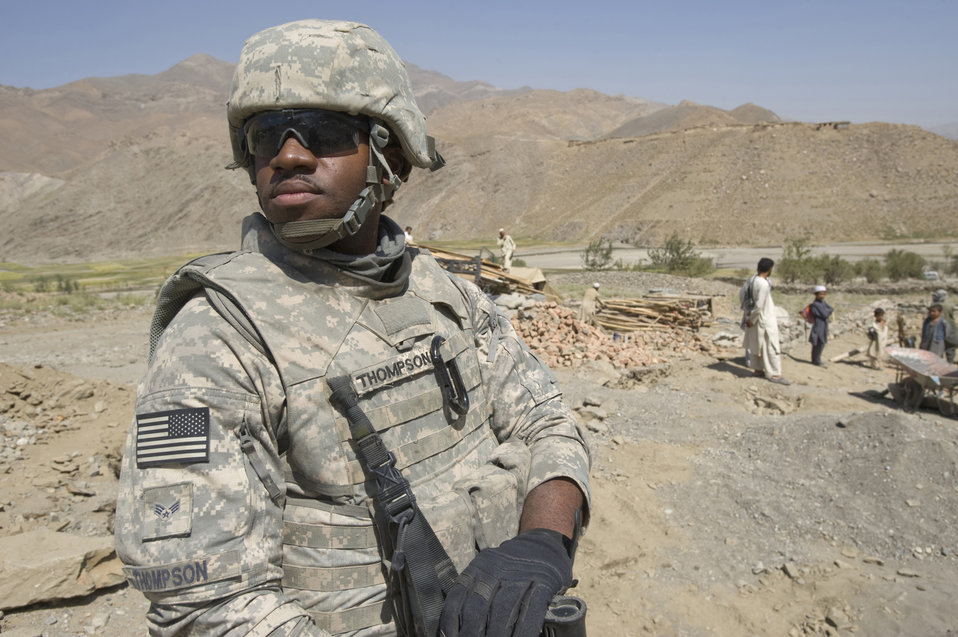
Operation Enduring Freedom

Senior Airman Courtney Thompson stands guard as fellow team members operate a makeshift medical clinic in an isolated Afghan village. The joint-service team has members from the Air Force, Army and Navy assigned to it. Airman Thompson is assigned to the Kapisa and Parwan Provincial Reconstruction Team, Ill.